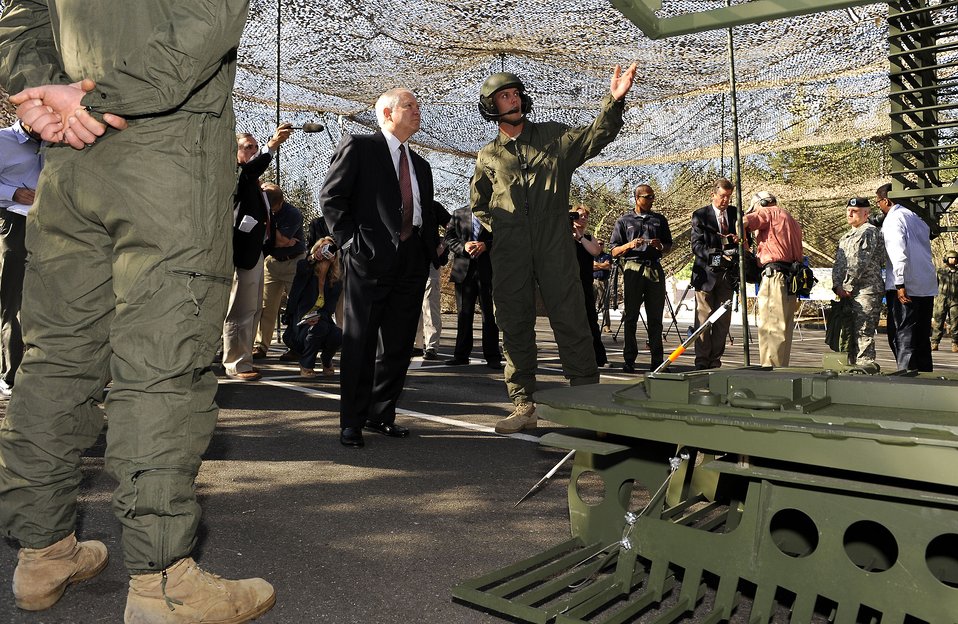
Secretary of Defense Robert M. Gates receives a briefing from Army Sgt. Brady Malear about the different Stryker variant vehicles during a tour of the 5th Brigade, 2nd Infantry Division at Fort Lewis, Wash., July 8.